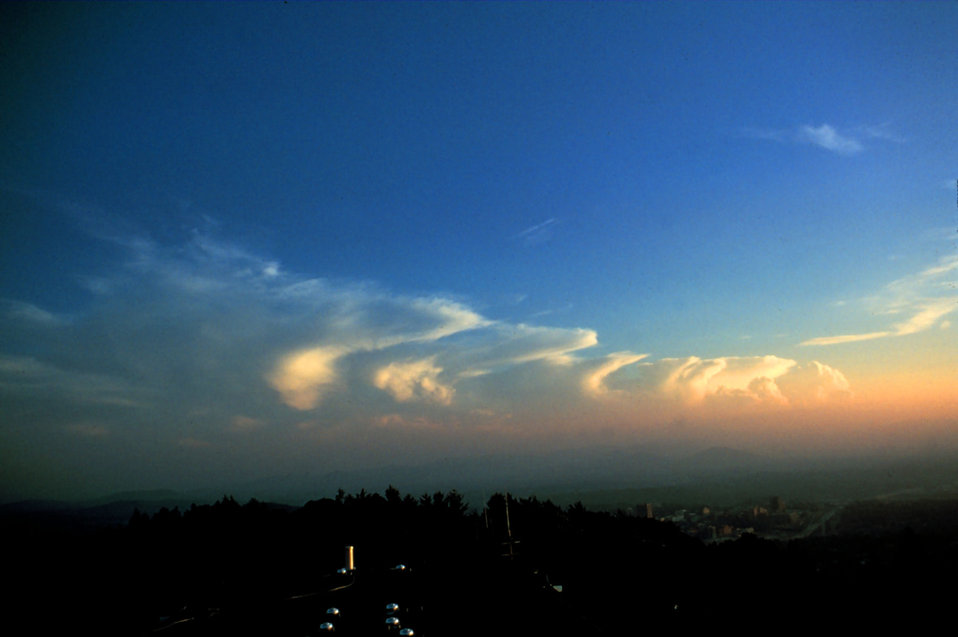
Cumulonimbus